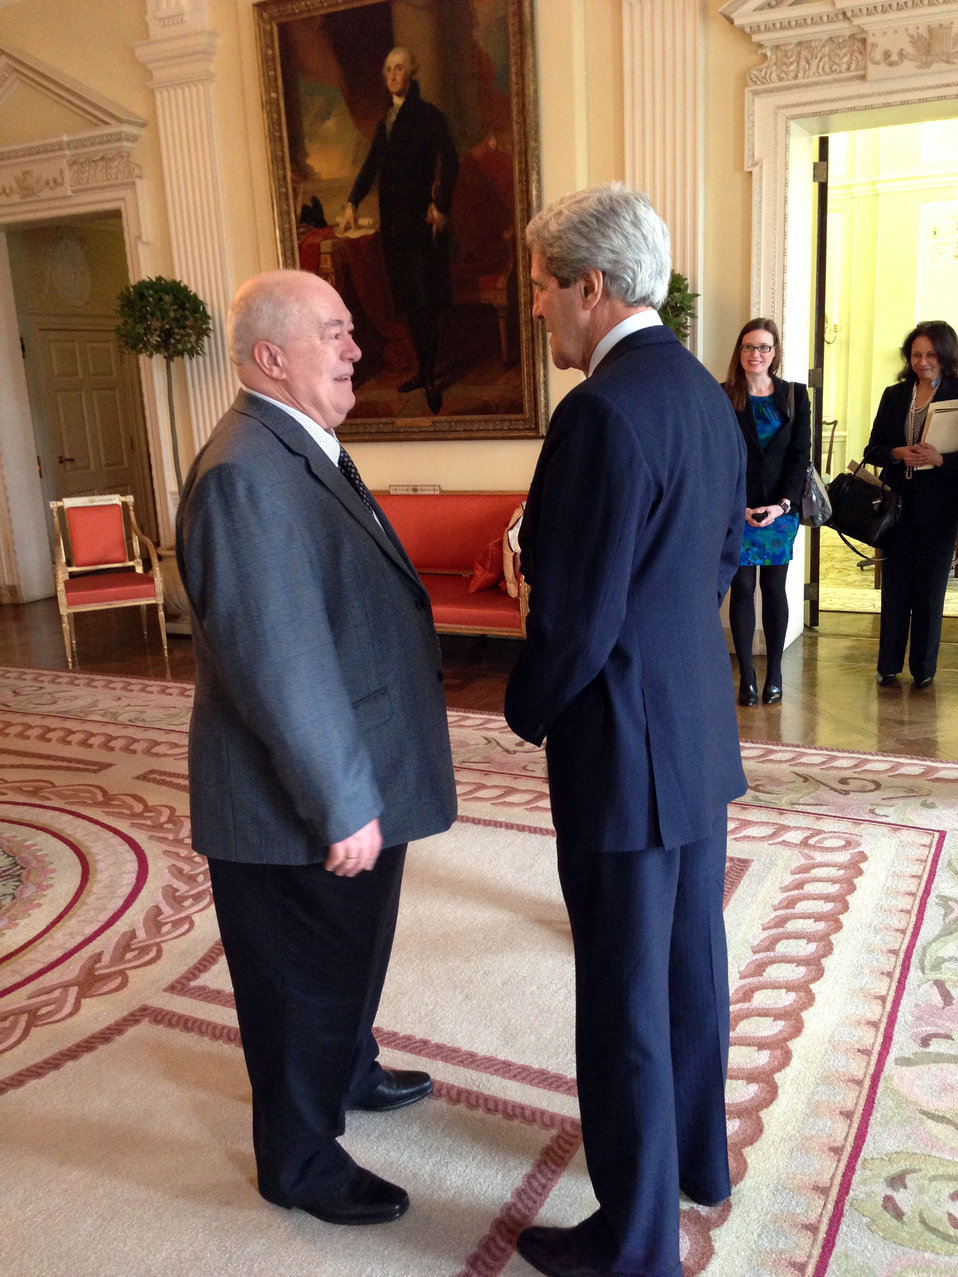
Secretary Kerry Greets Tony Smith of Embassy London

U.S. Secretary of State John Kerry greets Tony Smith, a 47-year U.S. Embassy employee who is retiring, at the Winfield House, the residence of the U.S. Ambassador, in London, United Kingdom, April 10, 2013.